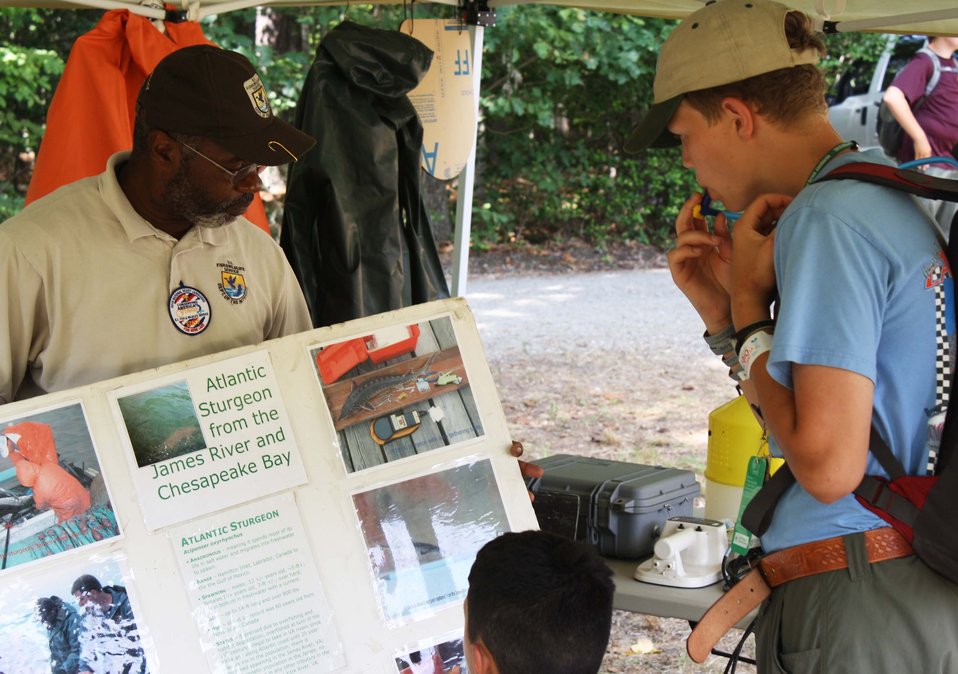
Boy Scout Jamboree 2010